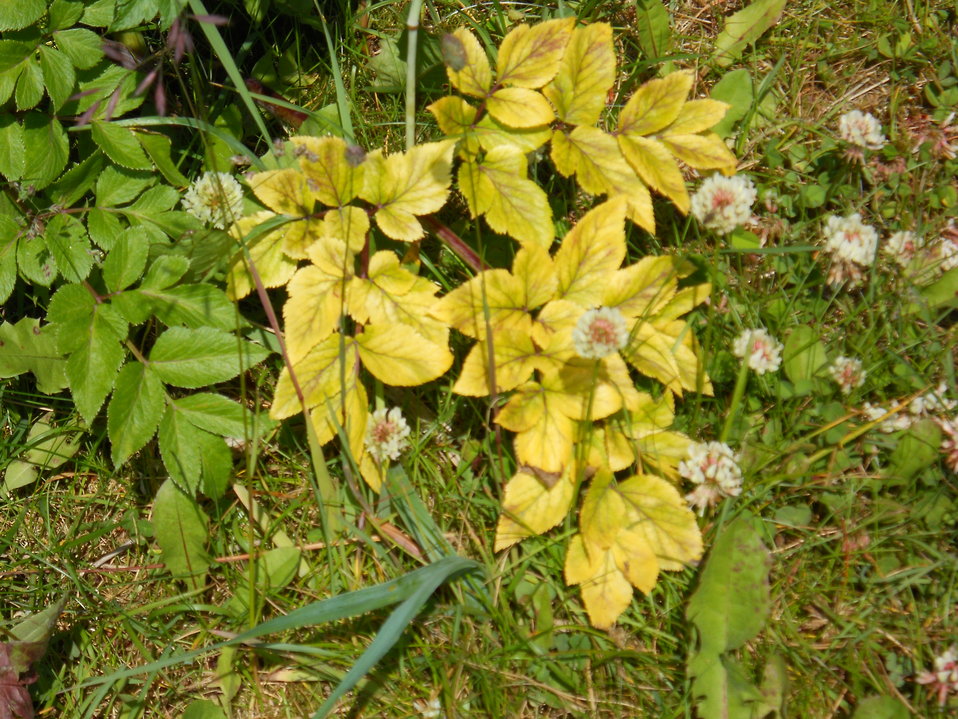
Clover Flowers and Yellow Leaves

Credit: USFWS
Photo taken by a Salmon Camp participant during a nature photography activity.

Source and Contact: Kodiak National Wildlife Refuge